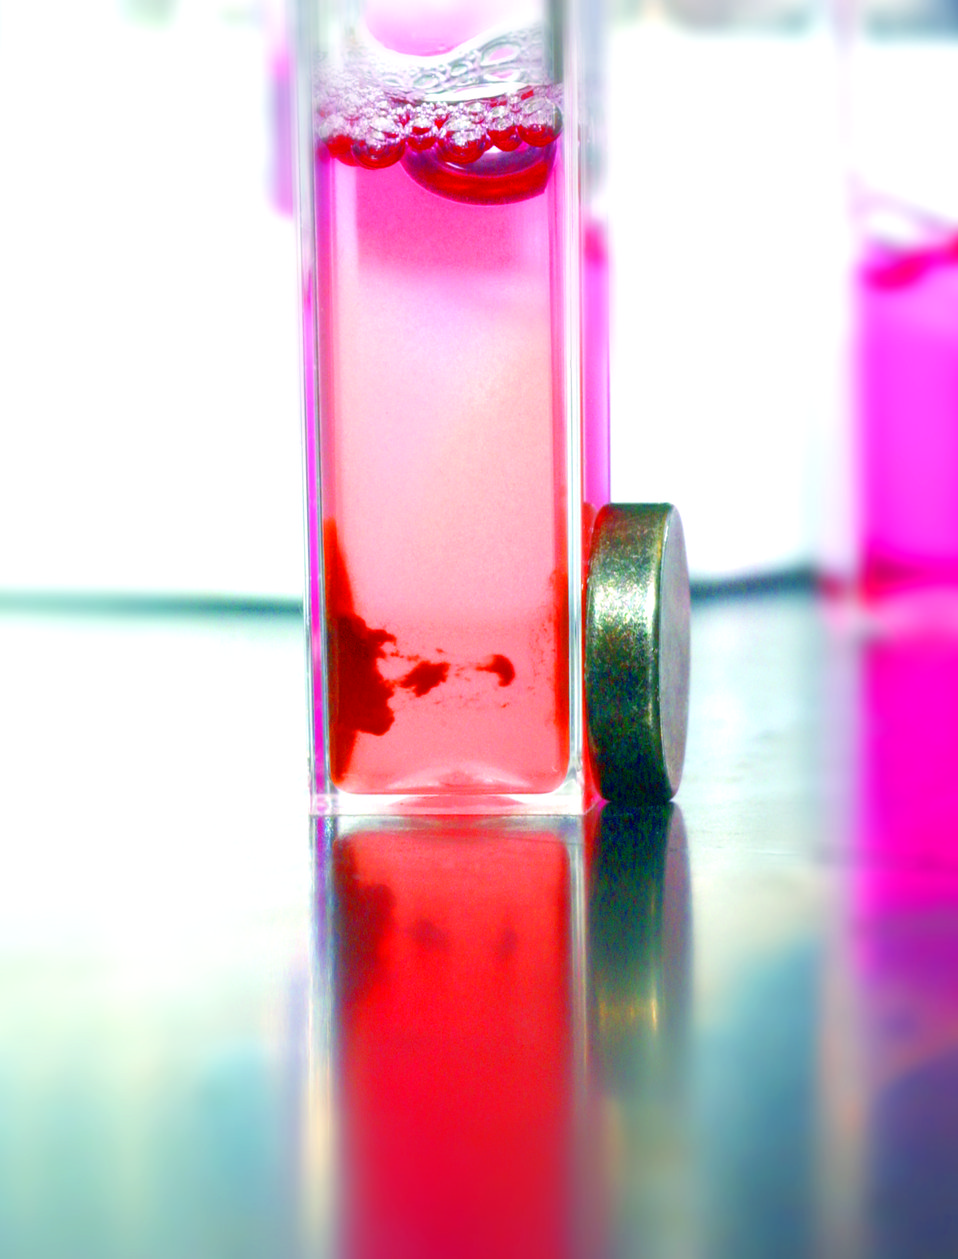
Shown are living human cervical cancer cells containing mesoporous silica nanospheres capped with iron-oxide nanoparticles are drawn through solution toward a small rare-earth magnet placed beside the vial at Ames Lab.

At Ames Lab, chemists has found a way to use nanoscale to deliver a dose of chemotherapy drugs to specific cancer cells without the risk of side affects to healthy cells. Using tiny silica parties called nanospheres to carry drugs inside living cells, the lab is studying different methods to control whether the particle delivers its pharmaceutical payload. The nanospheres are only about 200 nanometers in diameter, the size of the virus, so they would not trigger an immune response in the body. In addition, they can be readily absorbed by the cells. The nanospheres may provide the key to studying what takes place within a cell.